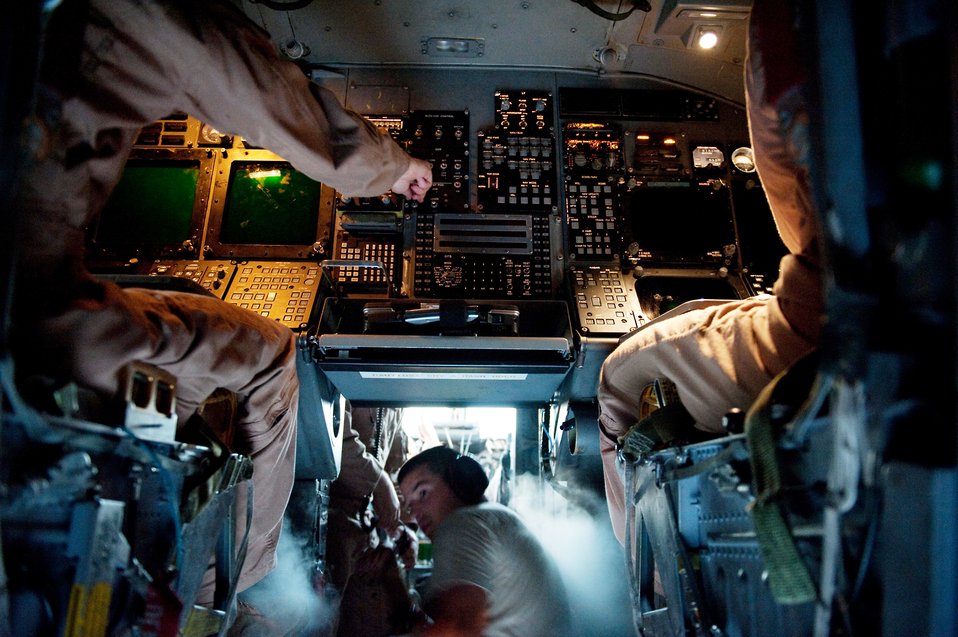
Checking out the B-1B for combat

Capts. Patrick Sines (left) and Scott Martley, 37th Expeditionary Bomb Squadron weapons systems officers, perform preflight checks on a B-1B Lancer Nov. 11, 2009, at an air base in Southwest Asia. Captains Sines and Martley are deployed with the aircraft from Ellsworth Air Force Base, S.D., in support of operations Iraqi Freedom and Enduring Freedom.